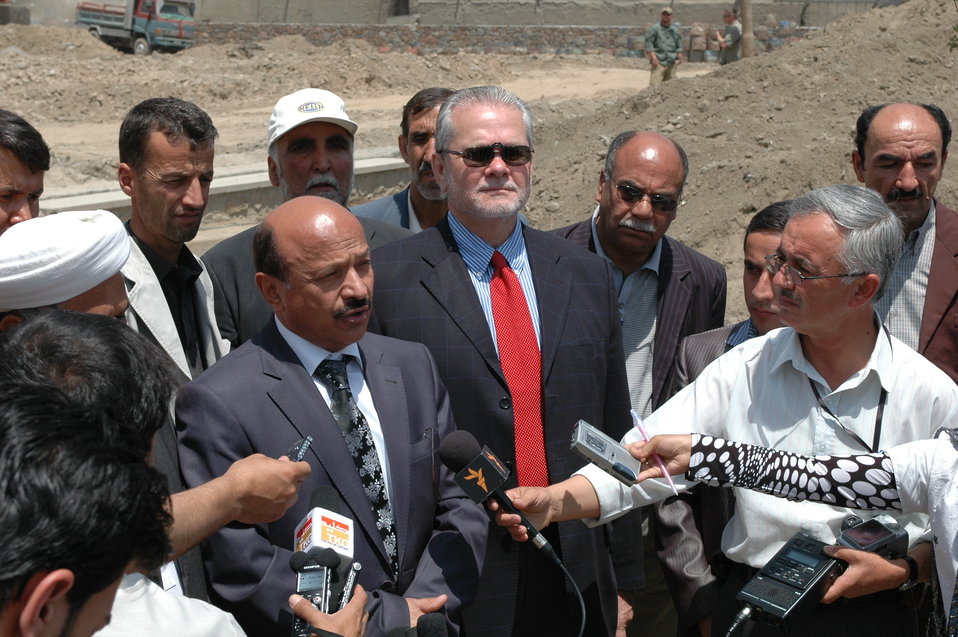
Baghe Qazi historical garden to be restored in old Kabul